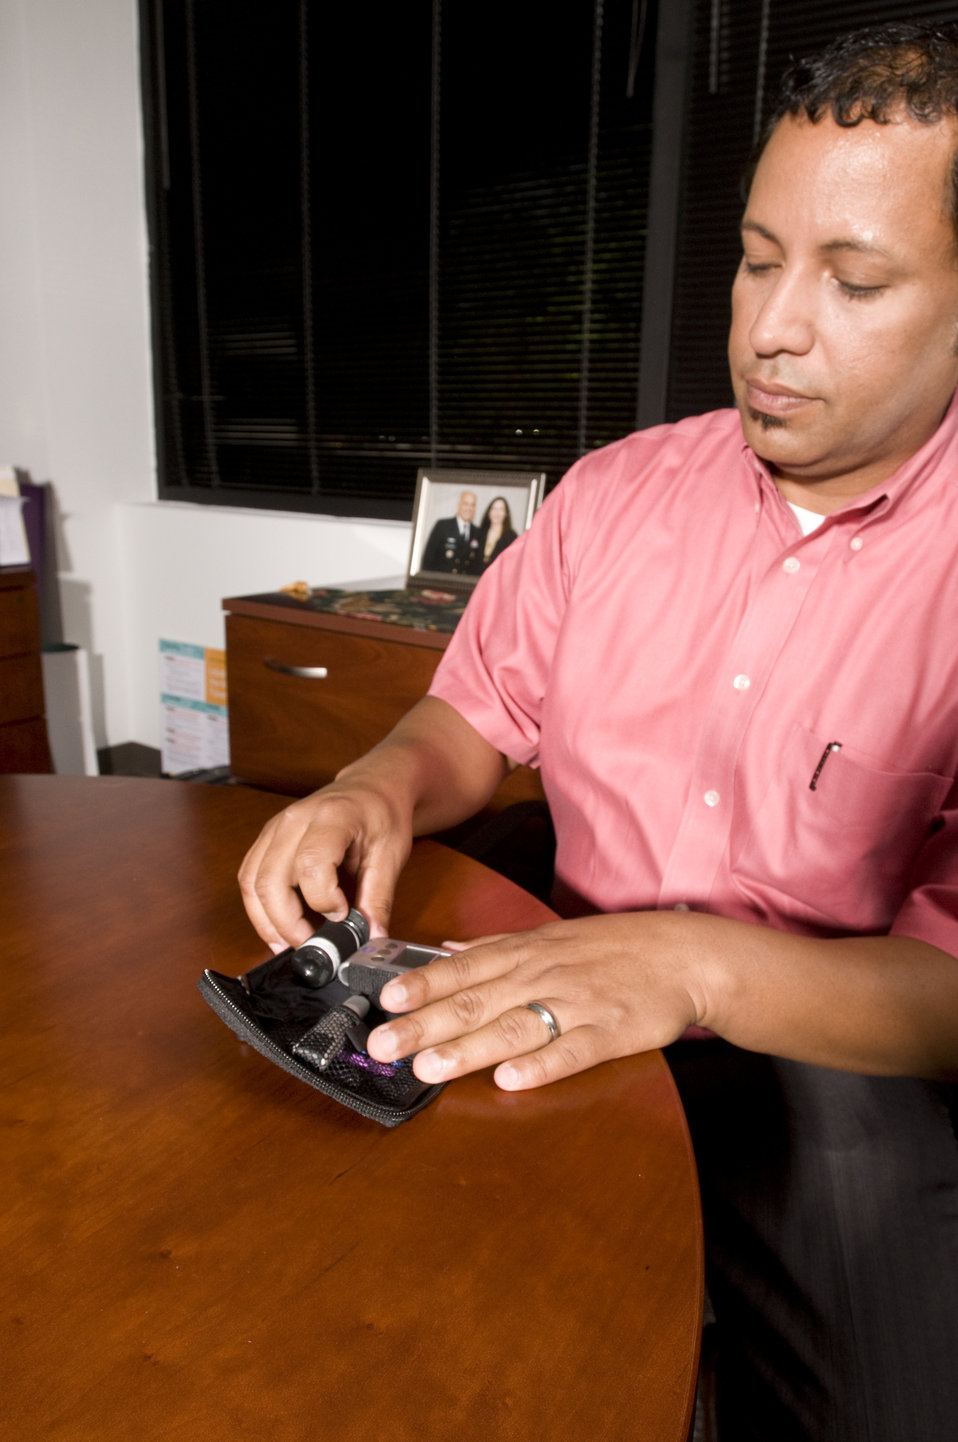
The man pictured here, was about to check his blood glucose level. This process is known as self-monitoring blood glucose, and it's a way for people with diabetes to find out how much glucose is in their blood. A drop of blood from the fingertip is placed on a special coated strip of paper that 'reads' the amount of glucose in the blood. Many people use an electronic meter to get this reading. This patient was examining his glucose monitoring kit, which included a mechanical finger stick, an electronic glucose monitor, and a number of glucose-sensitive examination strips.